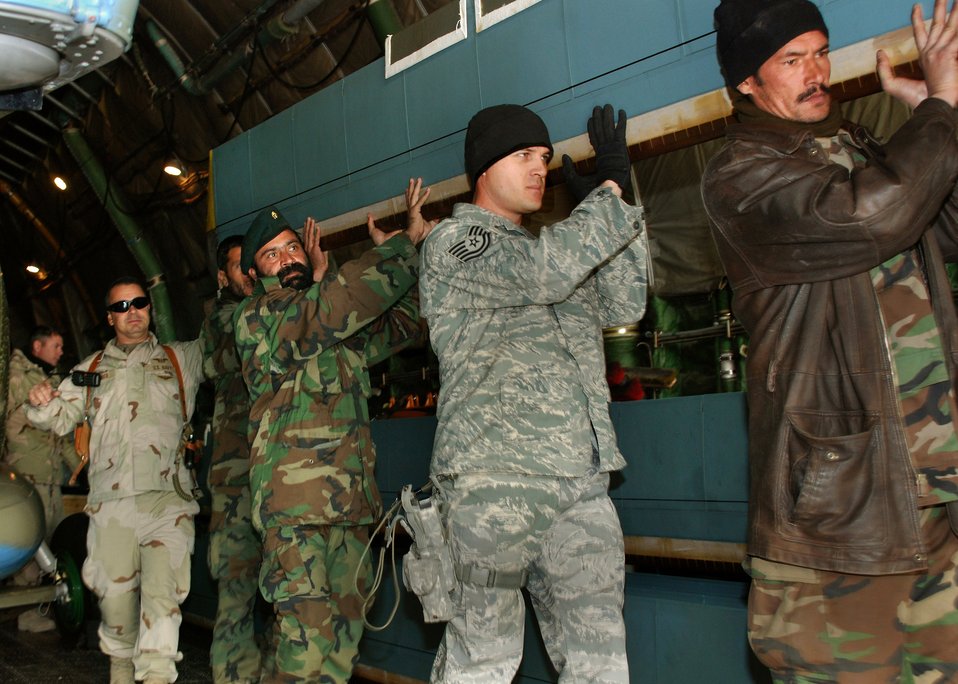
Airmen help deliver helicopters to Afghan military

Tech. Sgt. Scott Hirschenberger helps Afghan national army air corps helicopter crew chiefs unload helicopter blades from a cargo plane Dec. 5 at Kabul, Afghanistan. The blades are part of a shipment of three refurbished MI-17 helicopters donated to the ANAAC by the Czech Republic. Sergeant Hirschenberger is a mentor from the Combined Security Transition Command-Afghanistan and teaches the Afghan soldiers proper safety procedures, aircraft handling and maintenance.